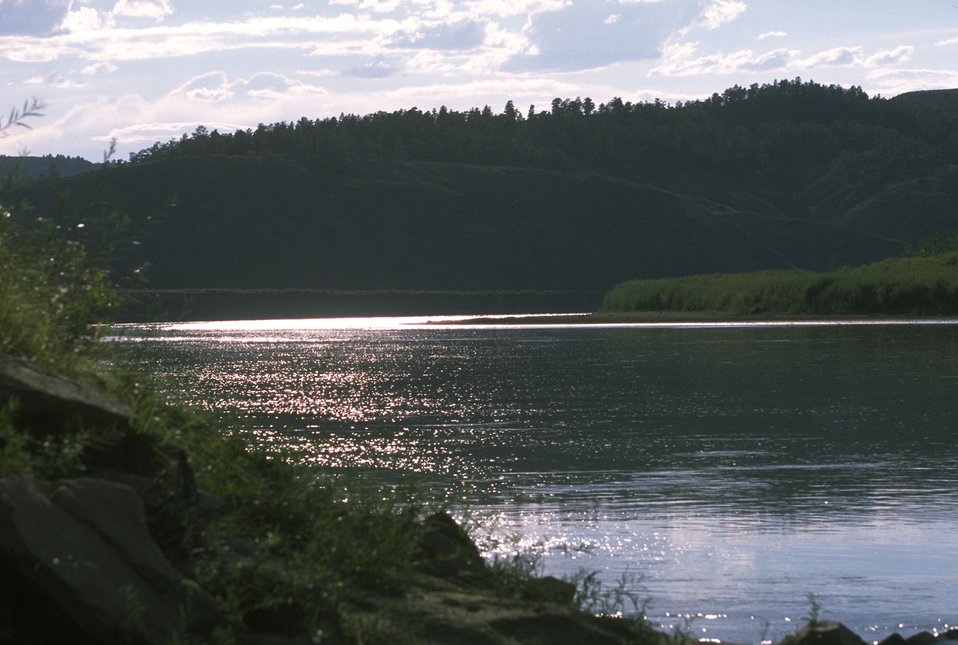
Missouri River